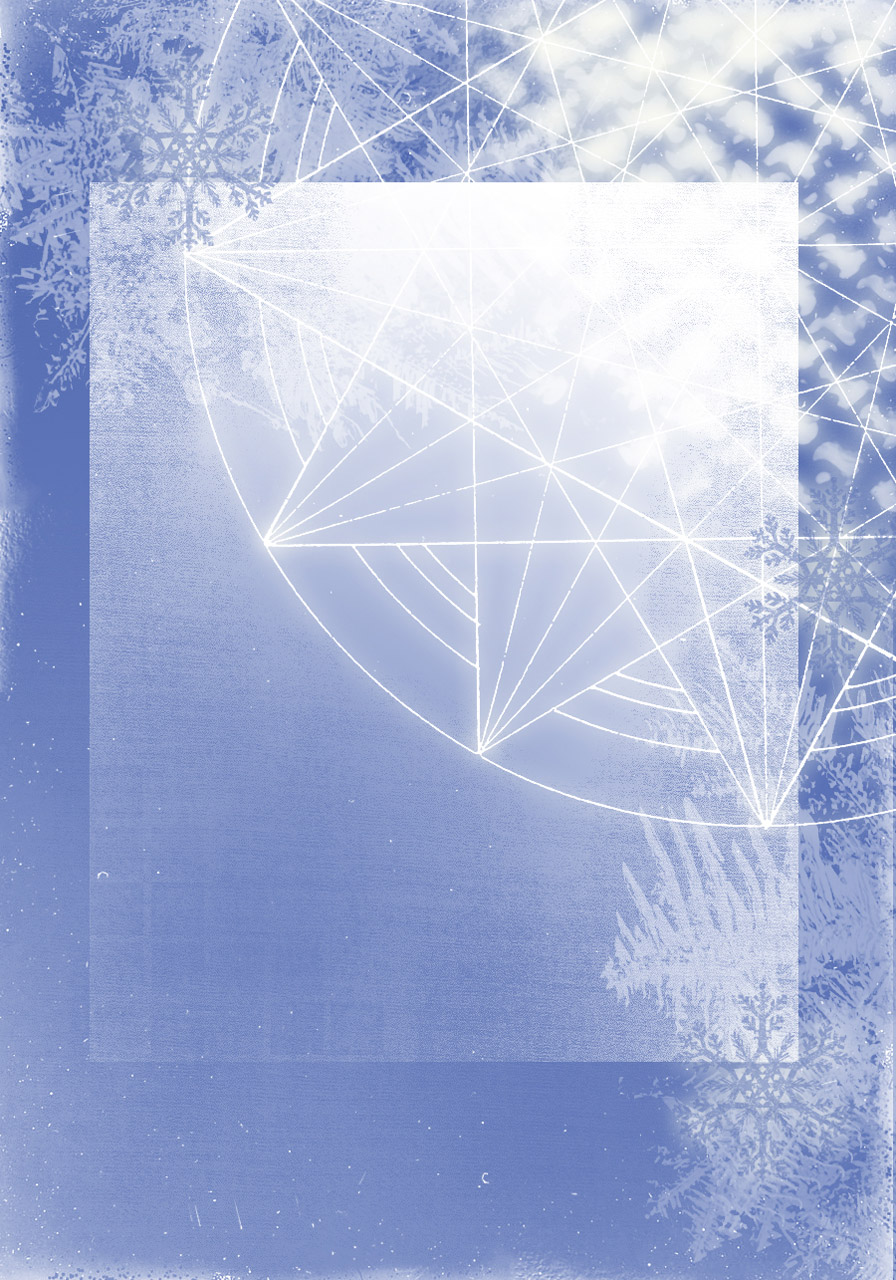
Winter background

Simple winter background in blue.